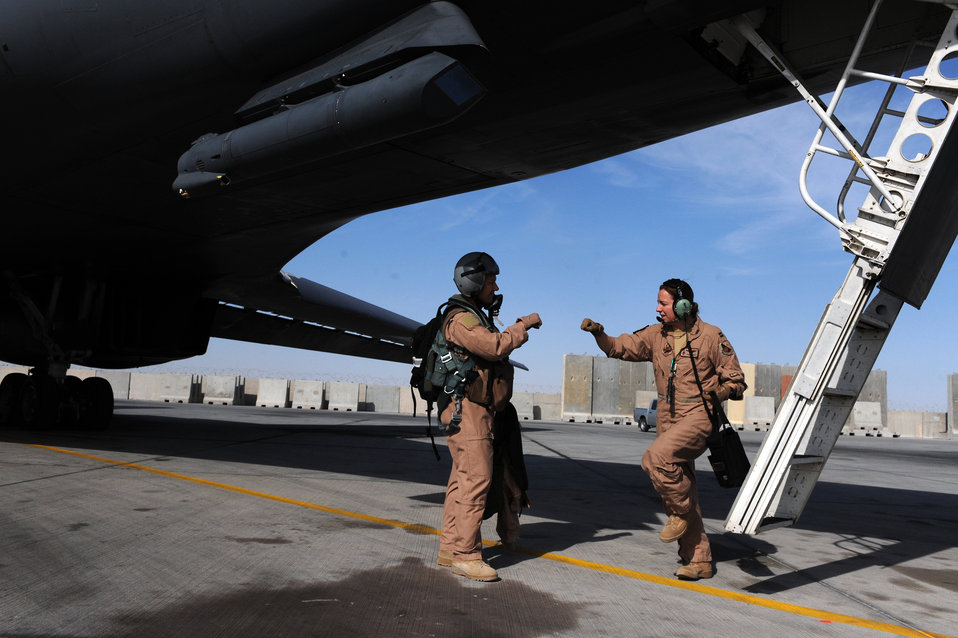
Operation Enduring Freedom

Lt. Col. John Martin and Capt. Tara Hart exchange a good-luck gesture before boarding a B-1B Lancer Jan. 23, 2010, at an air base in Southwest Asia. Colonel Martin is a B-1B Lancer pilot and Captain Hart is a B-1B weapon system officer. Both are assigned to the 37th Expeditionary Bomb Squadron.